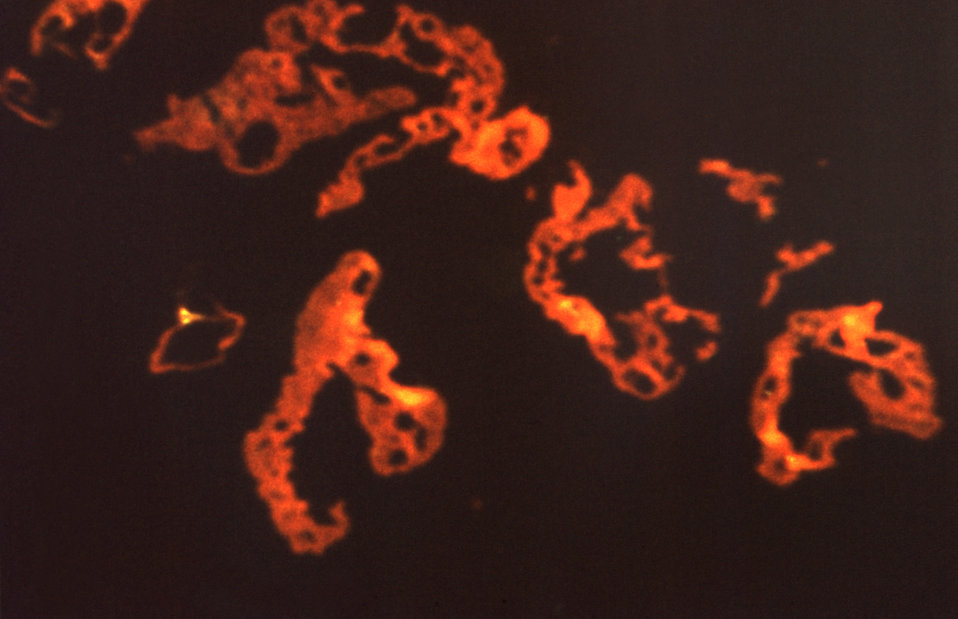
Under a low magnification of 78X, and stained using an indirect fluorescent antibody (IFA) test, this photomicrograph confirmed the presence of Schistosoma mansoni trematodes.Laboratory Diagnosis for Schistosomiasis: